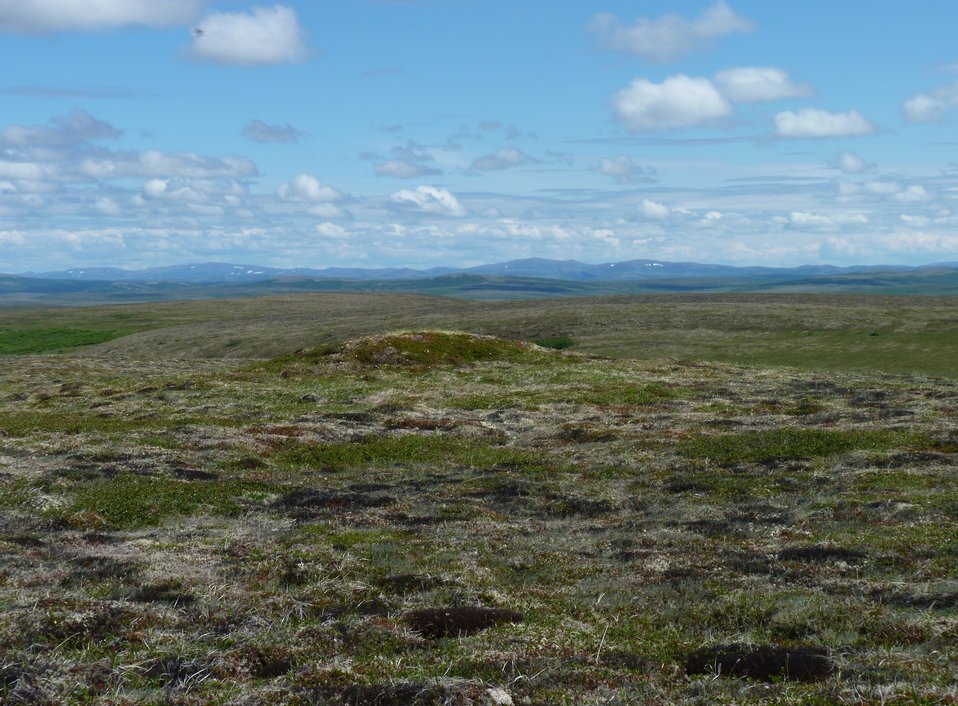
Andreafsky Wilderness, Yukon Delta National Wildlife Refuge